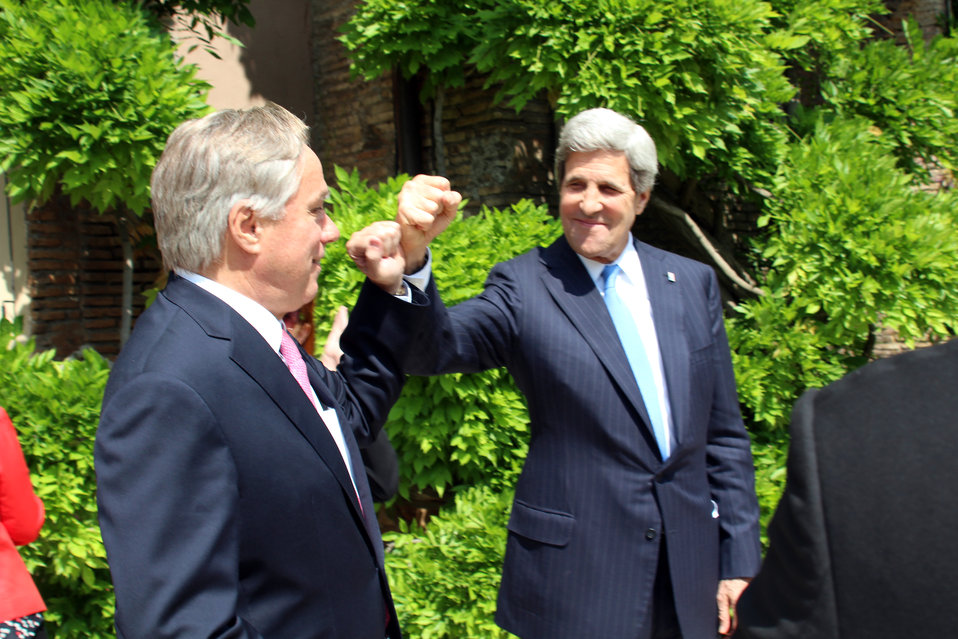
Secretary Kerry and Ambassador Thorne Bump Fists

U.S. Ambassador to Italy David Thorne and U.S. Secretary of State John Kerry tap fists as they joke with reporters at the U.S. ambassador's residence, the Villa Taverna, in Rome, Italy, on May 8, 2013.